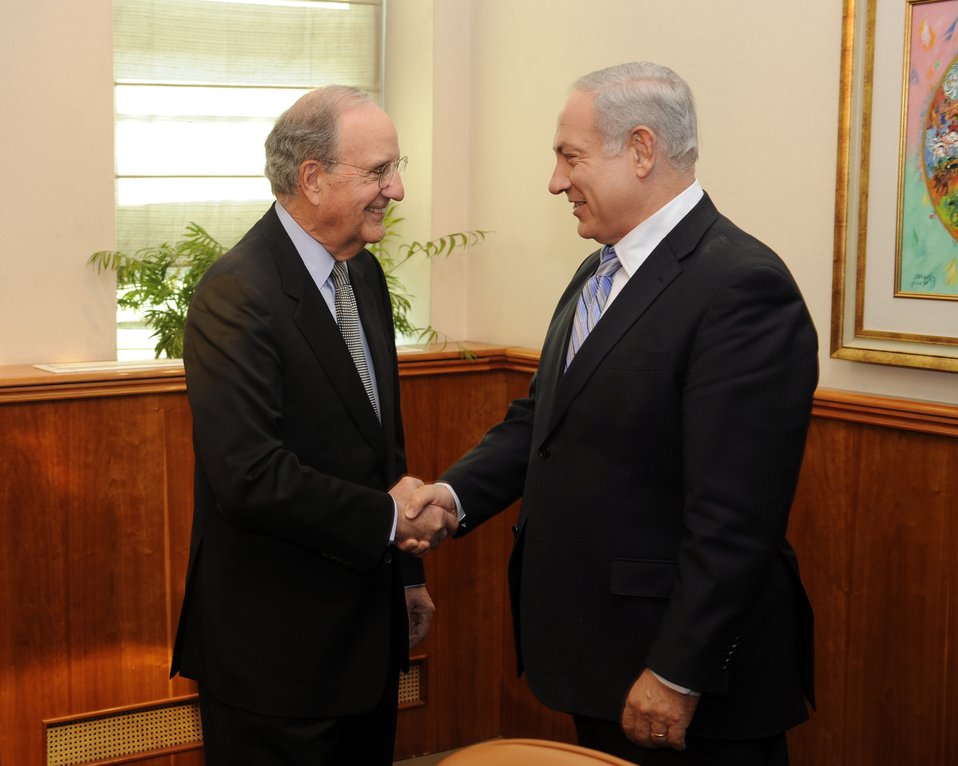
Special Envoy Mitchell Shakes Hands With Israeli Prime Minister Netanyahu

Special Envoy for Middle East Peace George Mitchell shakes hands with Israeli Prime Minister Binyamin Netanyahu at the Prime Minister’s office, Jerusalem, May 5, 2010.